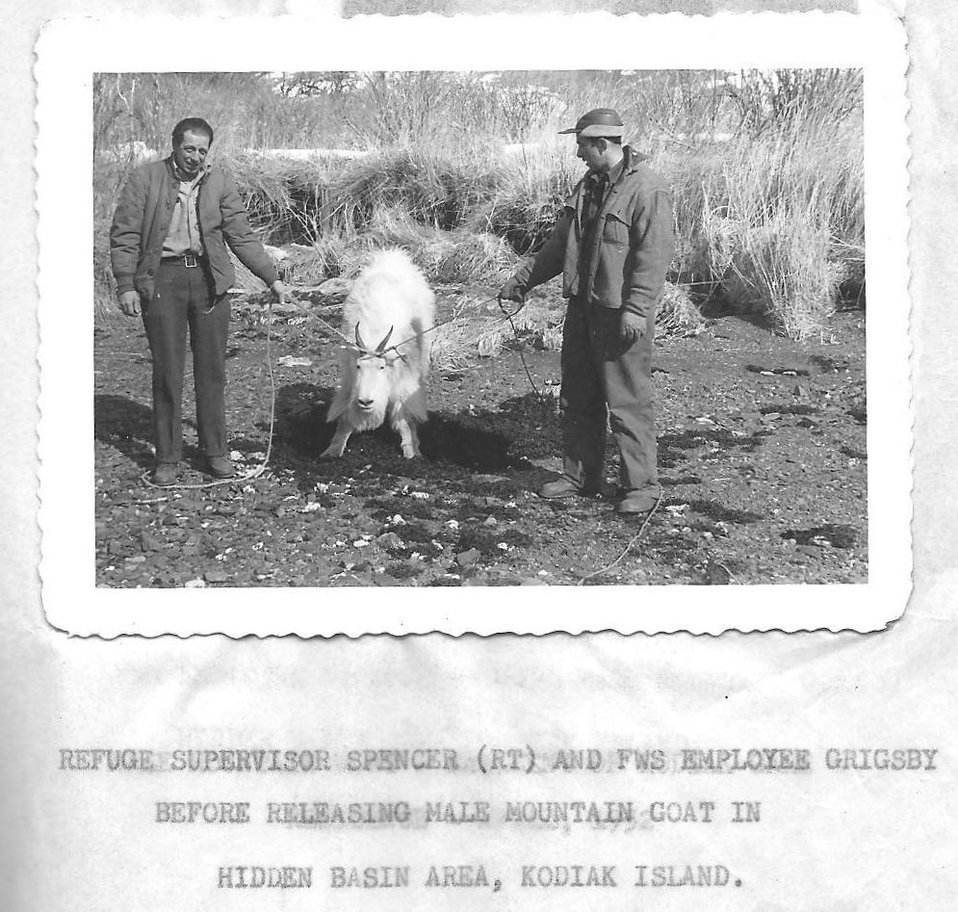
(1952) Pulled in Different Directions

Credit: USFWS

Source and Contact: Kodiak National Wildlife Refuge